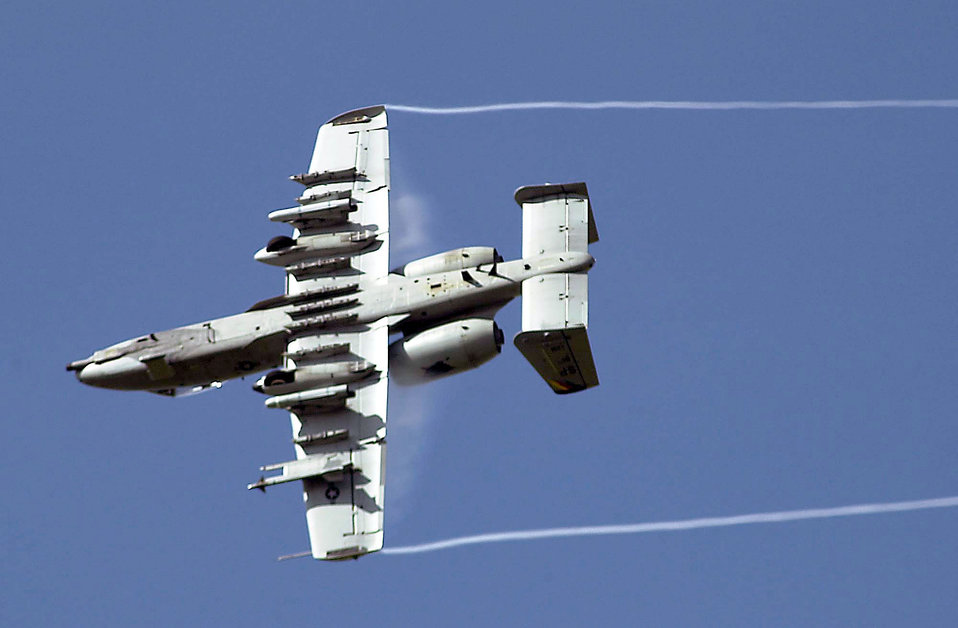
The thunder rolls

ROYAL AIR FORCE MILDENHALL, England -- An A-10 Thunderbolt II rolls to mark a target with simulated M-156 white phosphorus rockets as part of an aerial demonstration held here. The demonstration was for visiting U.S. civic, business, and industry leaders on the 2003 Joint Civilian Orientation Course.